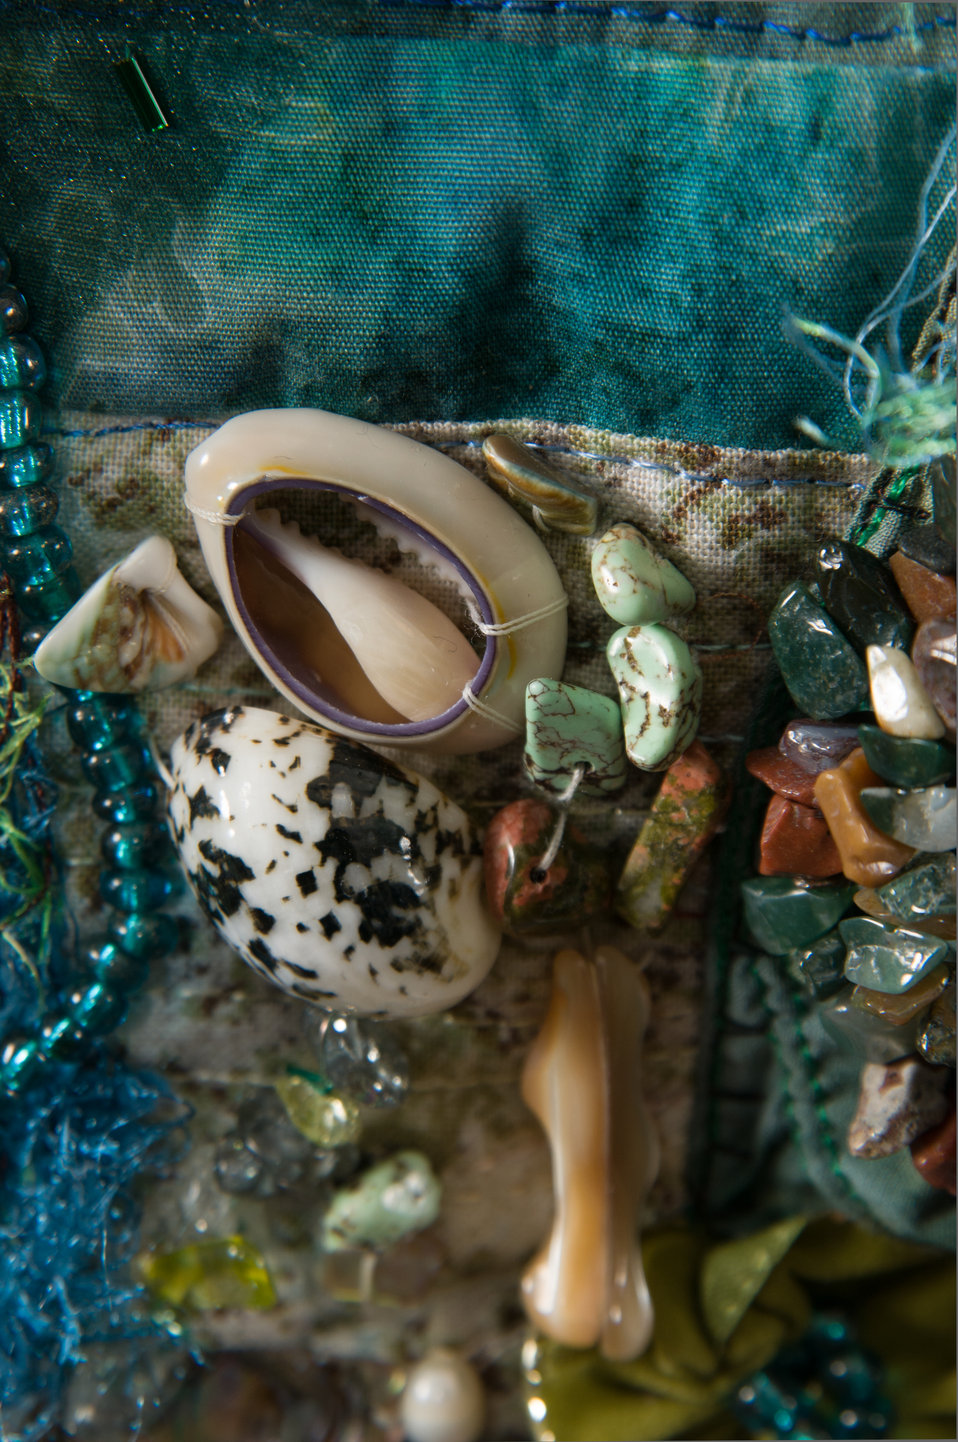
Online Viewer's Choice entries of the 2013 Art & Agriculture, Tuesday, July 9, 2013, in the South Building, Washington, D.C. Themes were expressed by employees from across the department and the contest was open to full-time and part-time USDA employees. Winning artwork will be displayed till the end of the year. U.S. Artistic expression is a creative outlet that is vital for an individual to grow and develop.